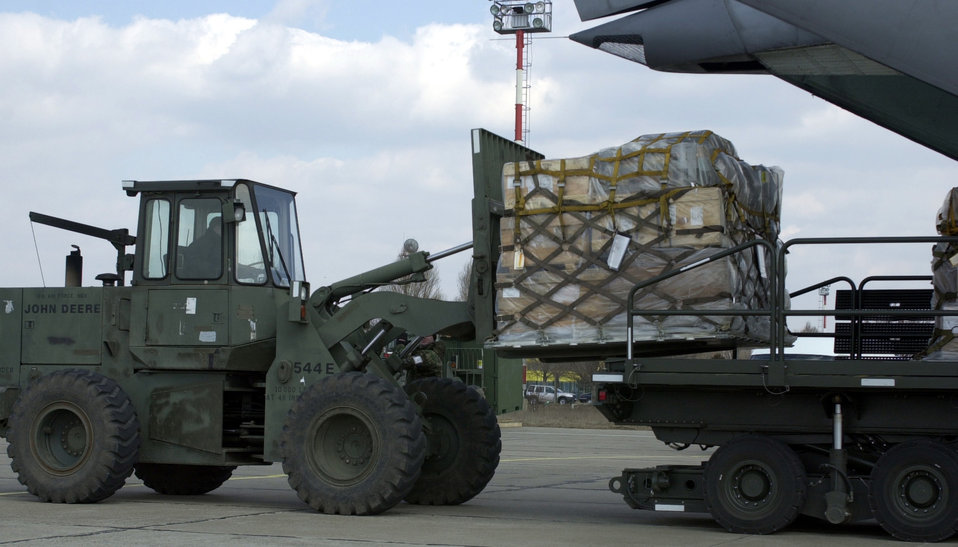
Forklift

MIHAIL KOGALNICEANU AIR BASE, Romania -- Members of the 458th Air Expeditionary Group unload cargo from a C-141 Starlifter in support of Operation Enduring Freedom. The group is maintaining an airbridge at the base to transport supplies and people to the U.S. Central Command area of responsibility.